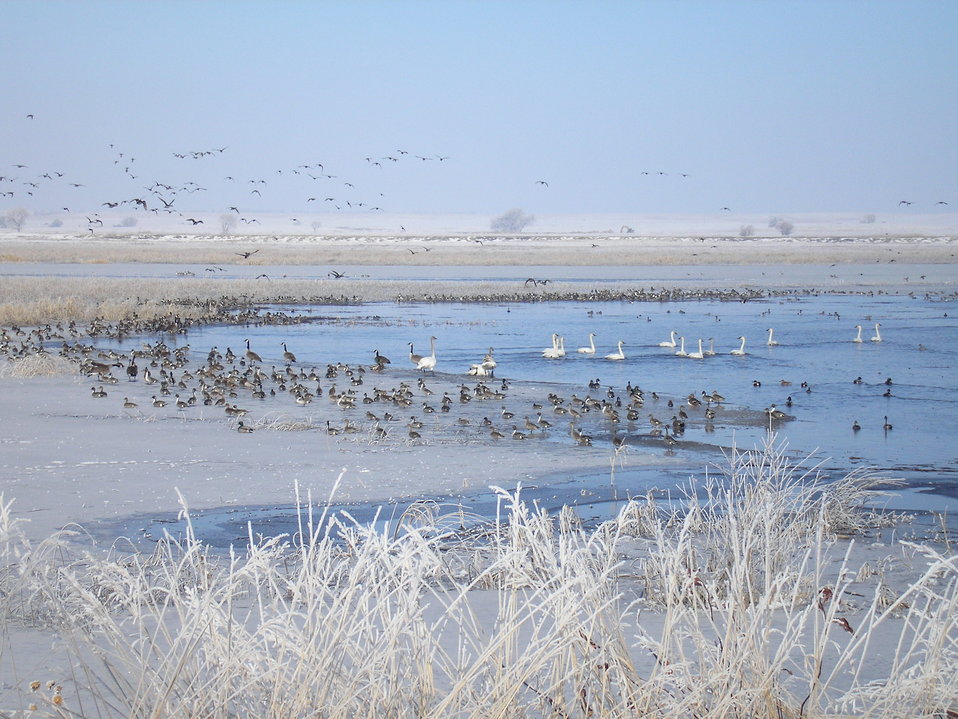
Late Winter Waterfowl on Lacreek NWR

Springs originating in the adjacent sandhills flow through Lacreek NWR and keep portions of some wetlands open through the winter. Trumpeter Swans, mallards, pintails, and Canada geese overwinter here. A late March storm froze most wetlands, but portions of this one remained open.